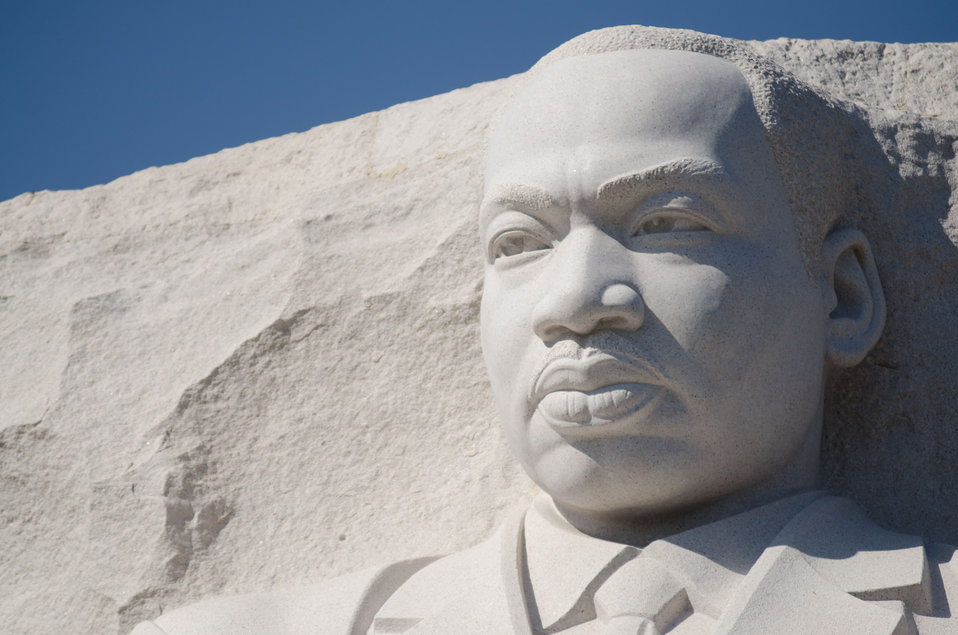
Martin Luther King, Jr. Memorial in Washington, DC, on Saturday, October 8, 2011.